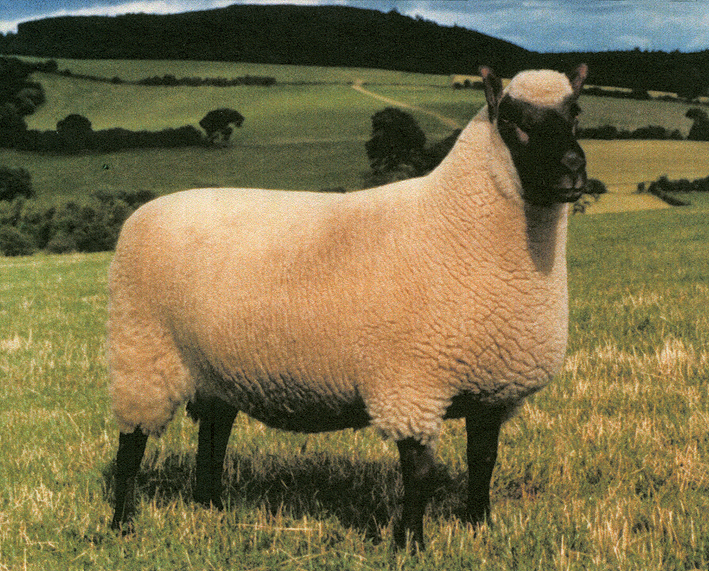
1980 Pen-Y-Wern Ram